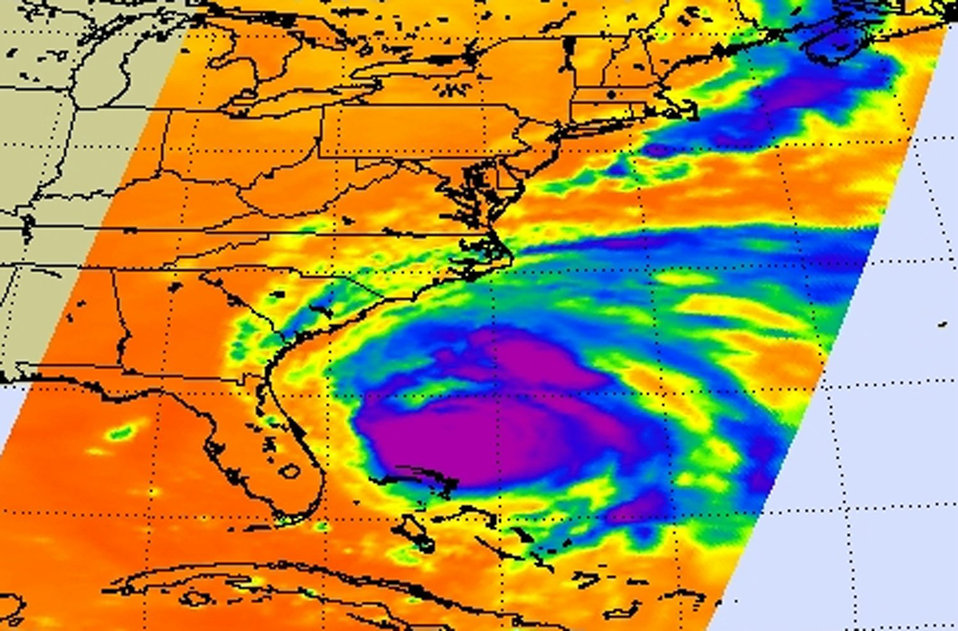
Radar map view of a hurricane over the Atlantic Ocean.